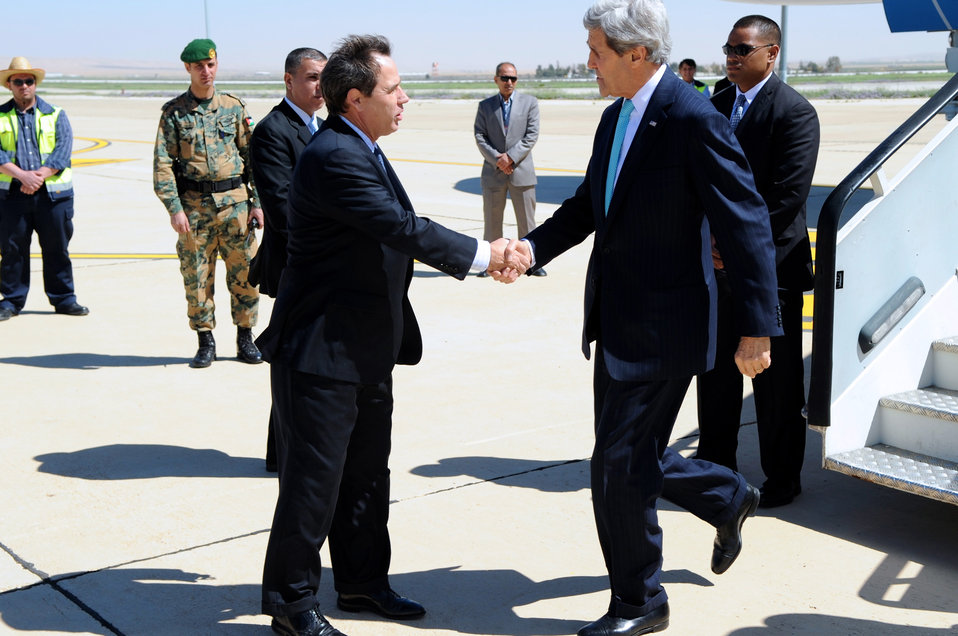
Secretary Kerry is Greeted by Ambassador Jones Upon Arrival in Amman

U.S. Ambassador to Jordan Stuart Jones greets U.S. Secretary of State John Kerry as he arrives in Amman for meetings with King Abdullah II of Jordan and Mahmoud Abbas, president of the Palestinian Authority, on March 26, 2014.